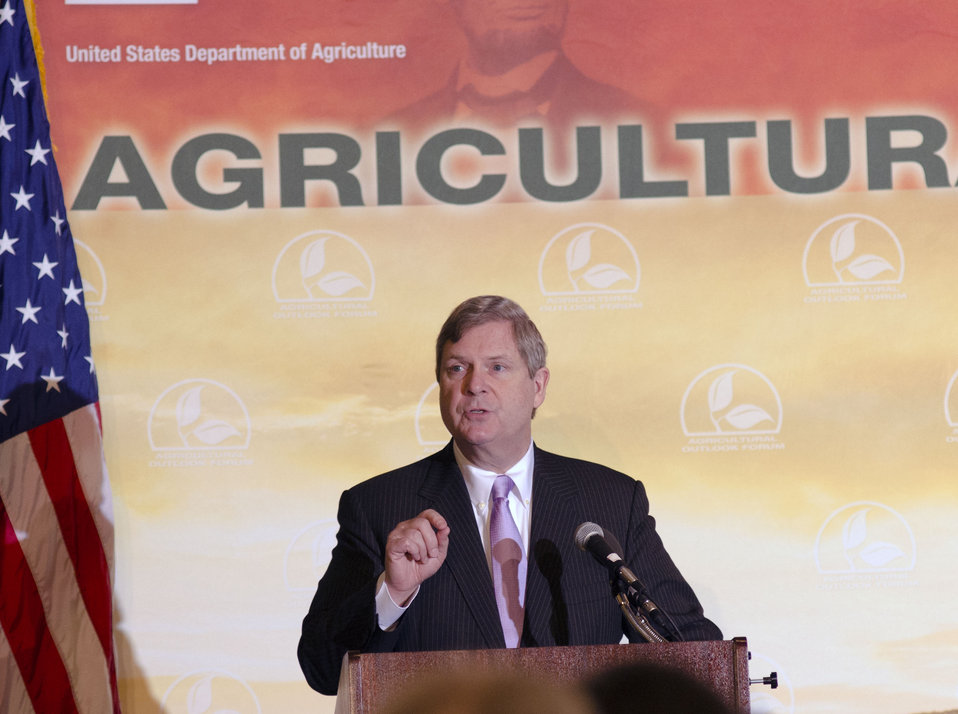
Agriculture Secretary Tom Vilsack presents the Keynote address at the Opening session of the 2013 Agriculture Outlook Forum, in Arlington, VA, on Thursday, February 21, 2013.